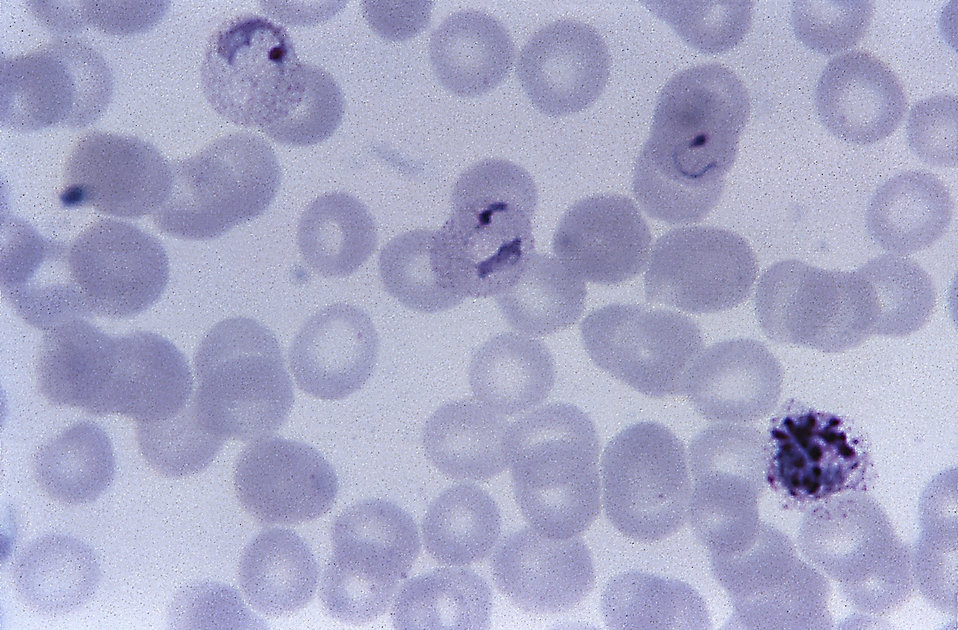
This thin film micrograph depicts an immature P. vivax schizont, ring form, and growing trophozoites; Magnified 1125X.